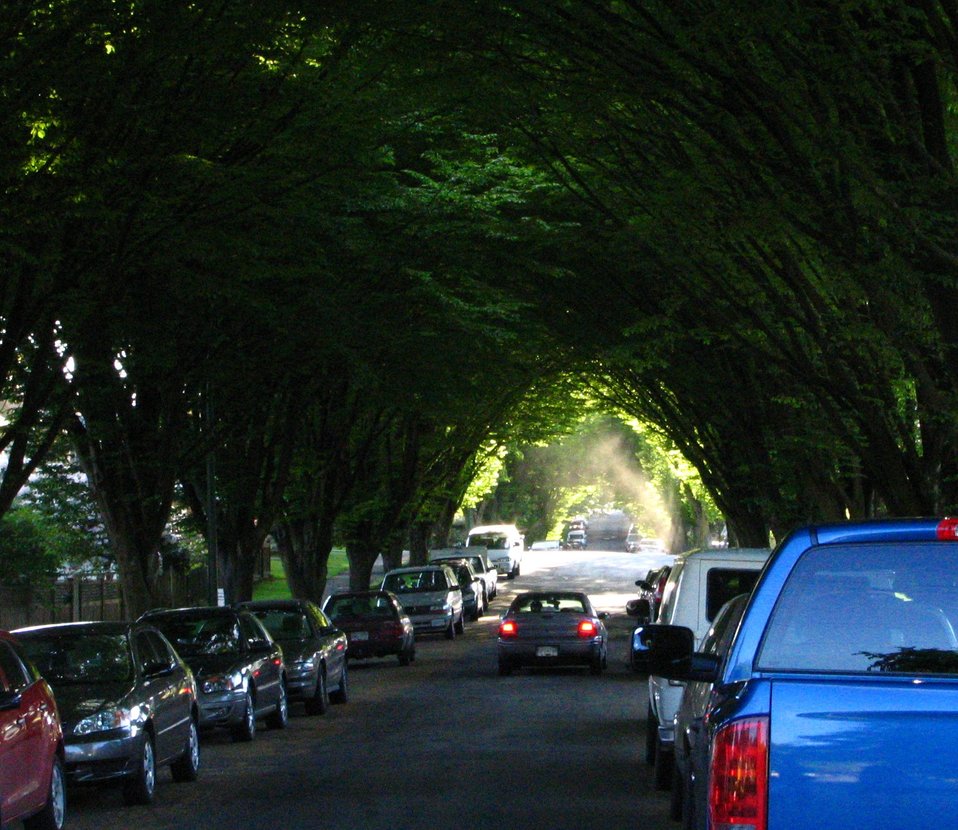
Taken by Martin Mullan, May 13, 2006. Photo of street trees in East Vancouver, British Columbia, Canada